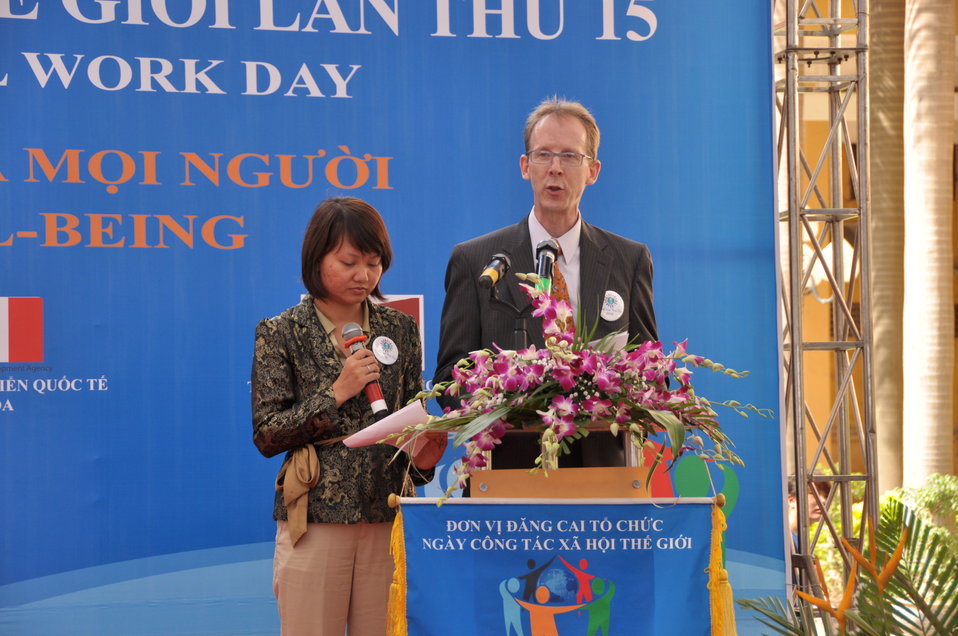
USAID Mission Director Joakim Parker speaks at the Social Work Day event in Hanoi

Photo: @USAIDVietnam, November 9, 2012